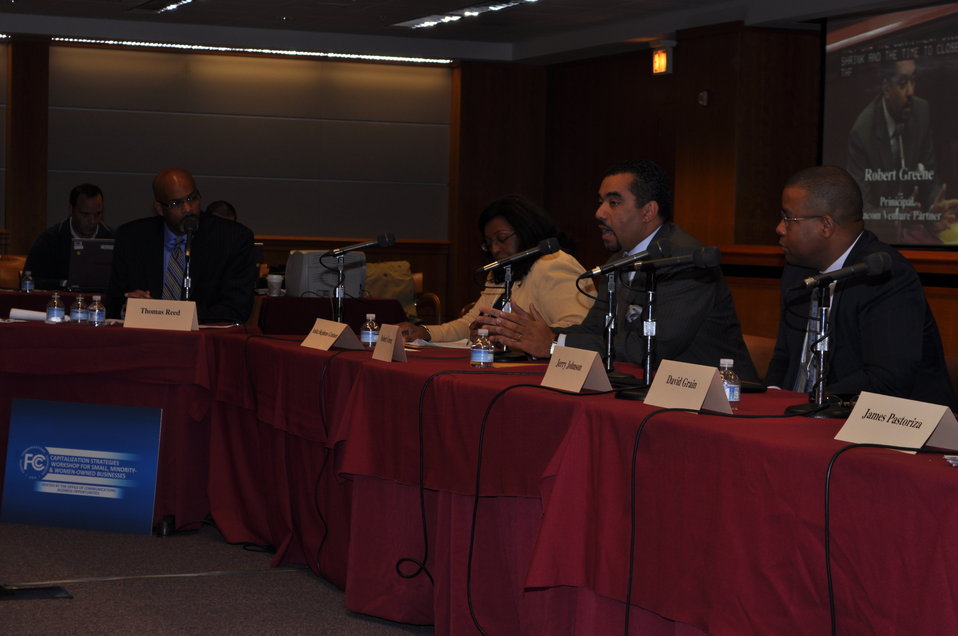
Capitalization Strategies

Workshop for small, minority and women owned businesses. Hosted by the Office of Communications Business Opportunities